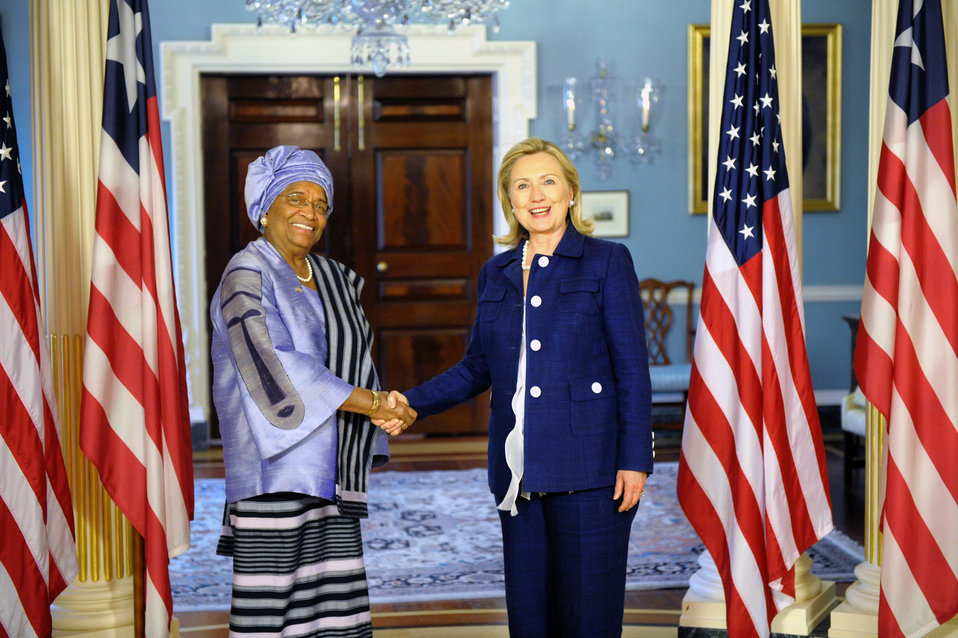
Secretary Clinton Shakes Hands With Liberian President Ellen Johnson Sirleaf

U.S. Secretary of State Hillary Rodham Clinton shakes hands with Liberian President Ellen Johnson Sirleaf after their bilateral meeting at the U.S. Department of State in Washington, D.C., on June 23, 2011.